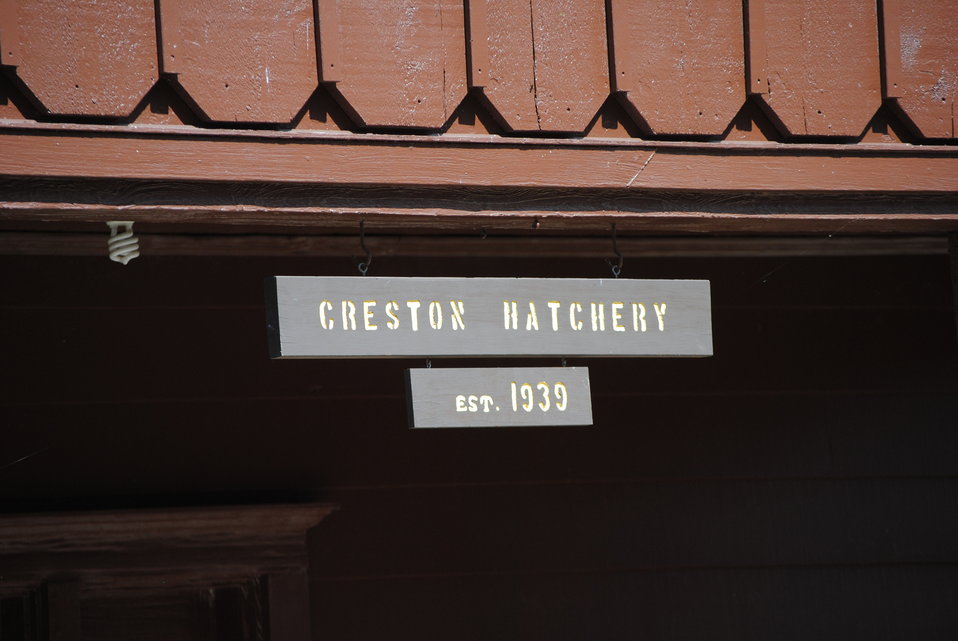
Creston National Fish Hatchery Rich in History

The Creston National Fish Hatchery, in association with the Flathead Community of Resource Educators (Flathead C.O.R.E.), holds an annual Fish Fun Fair to promote National Fishing and Boating Week.

Creston National Fish Hatchery invites 3rd graders from local schools to visit the hatchery and participate in learning stations, which may include fish anatomy, fish identification, fishing equipment and casting, hatchery tours, and other interesting exhibits with an aquatic focus.